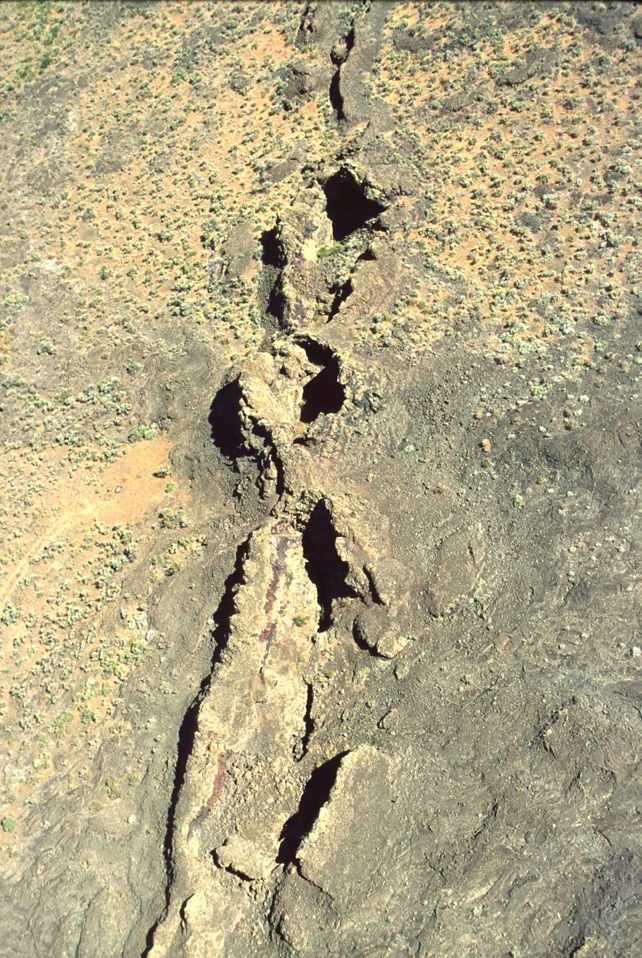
Shoshone Field Office USRD Upper Snake River District